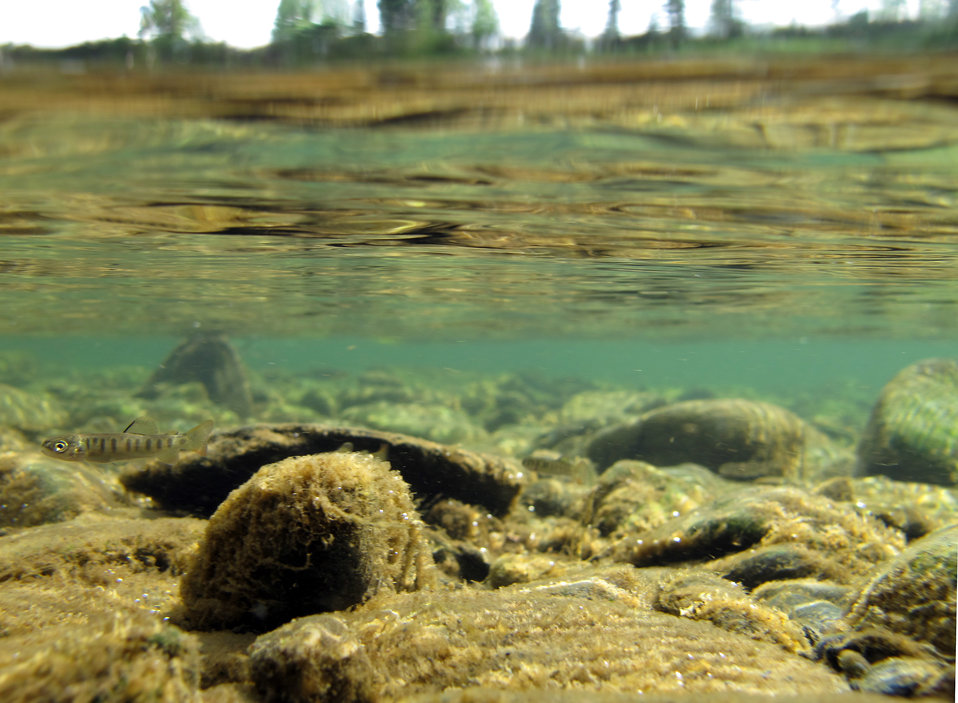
Juvenile salmon near Russian/Kenai River confluence

Can you spot this well-camouflaged juvenile?